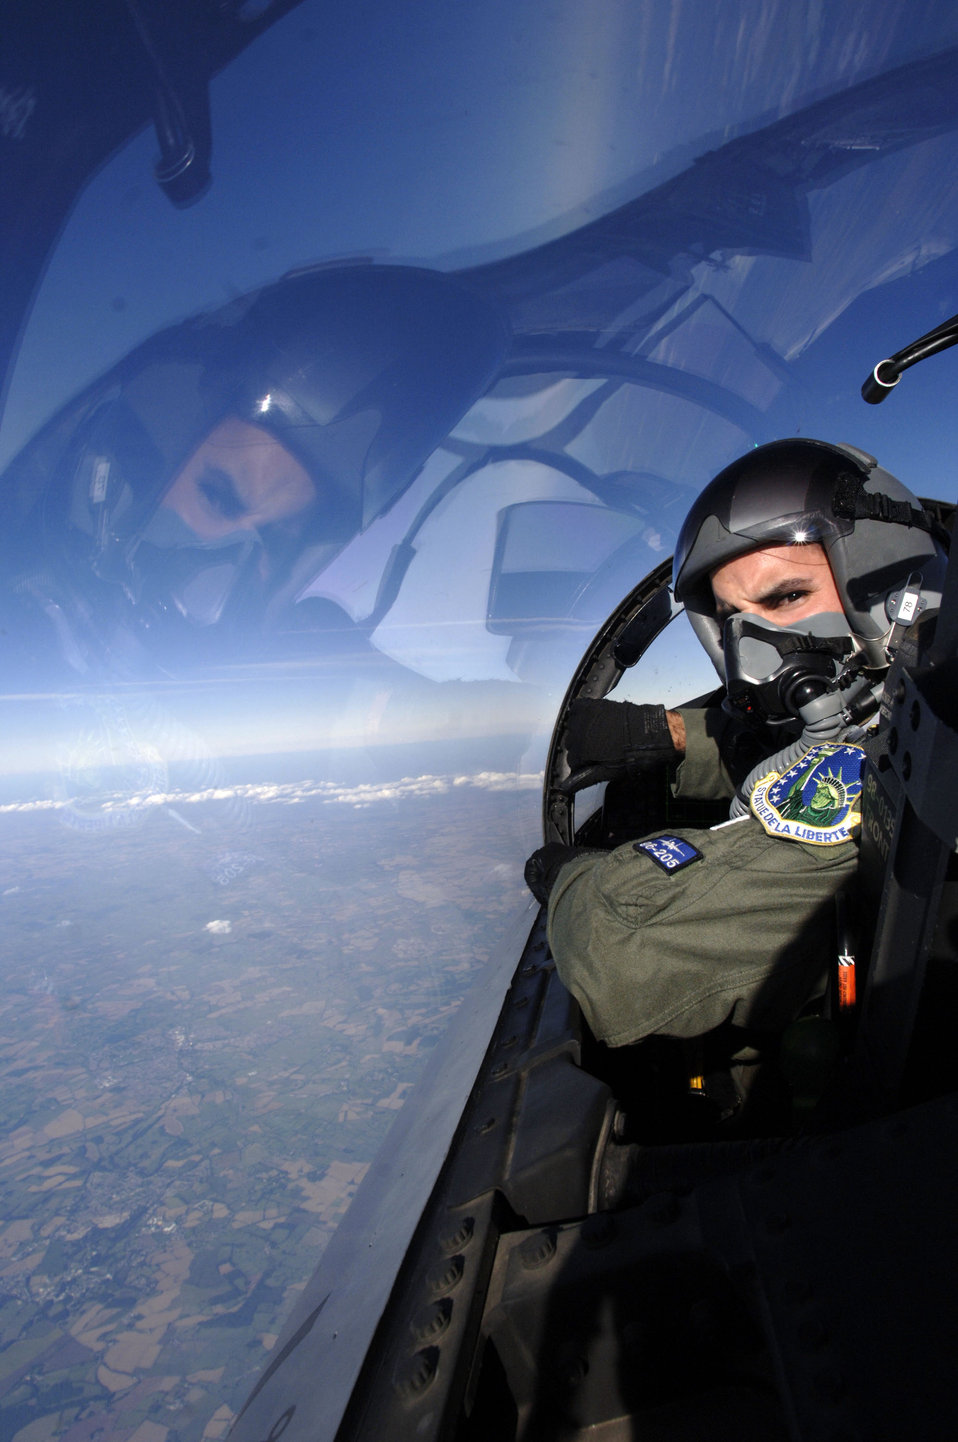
Following a flight of Eagles

Capt. Michael Jokhy